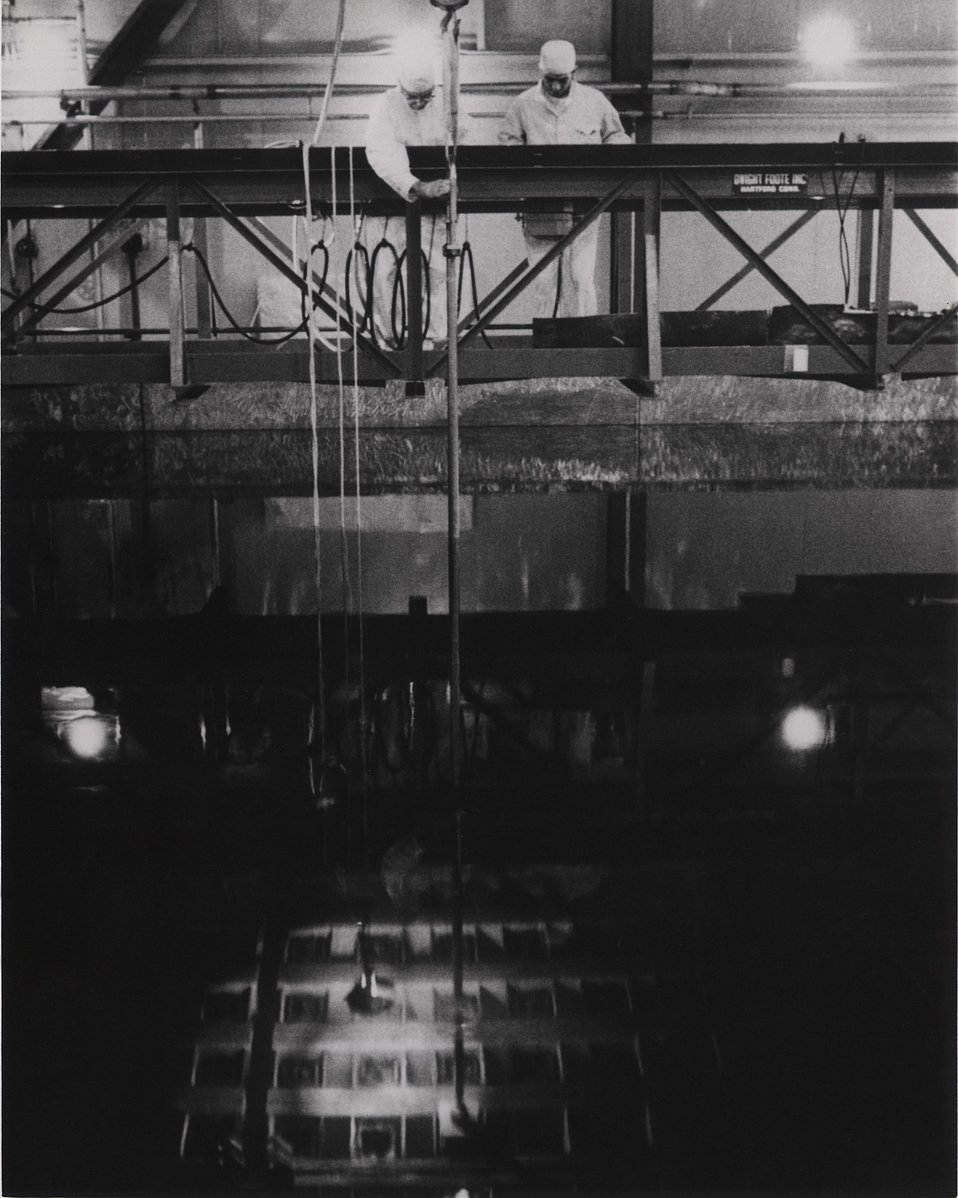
Plant workers insert a fuel assembly into an underwater fuel pit storage tank.